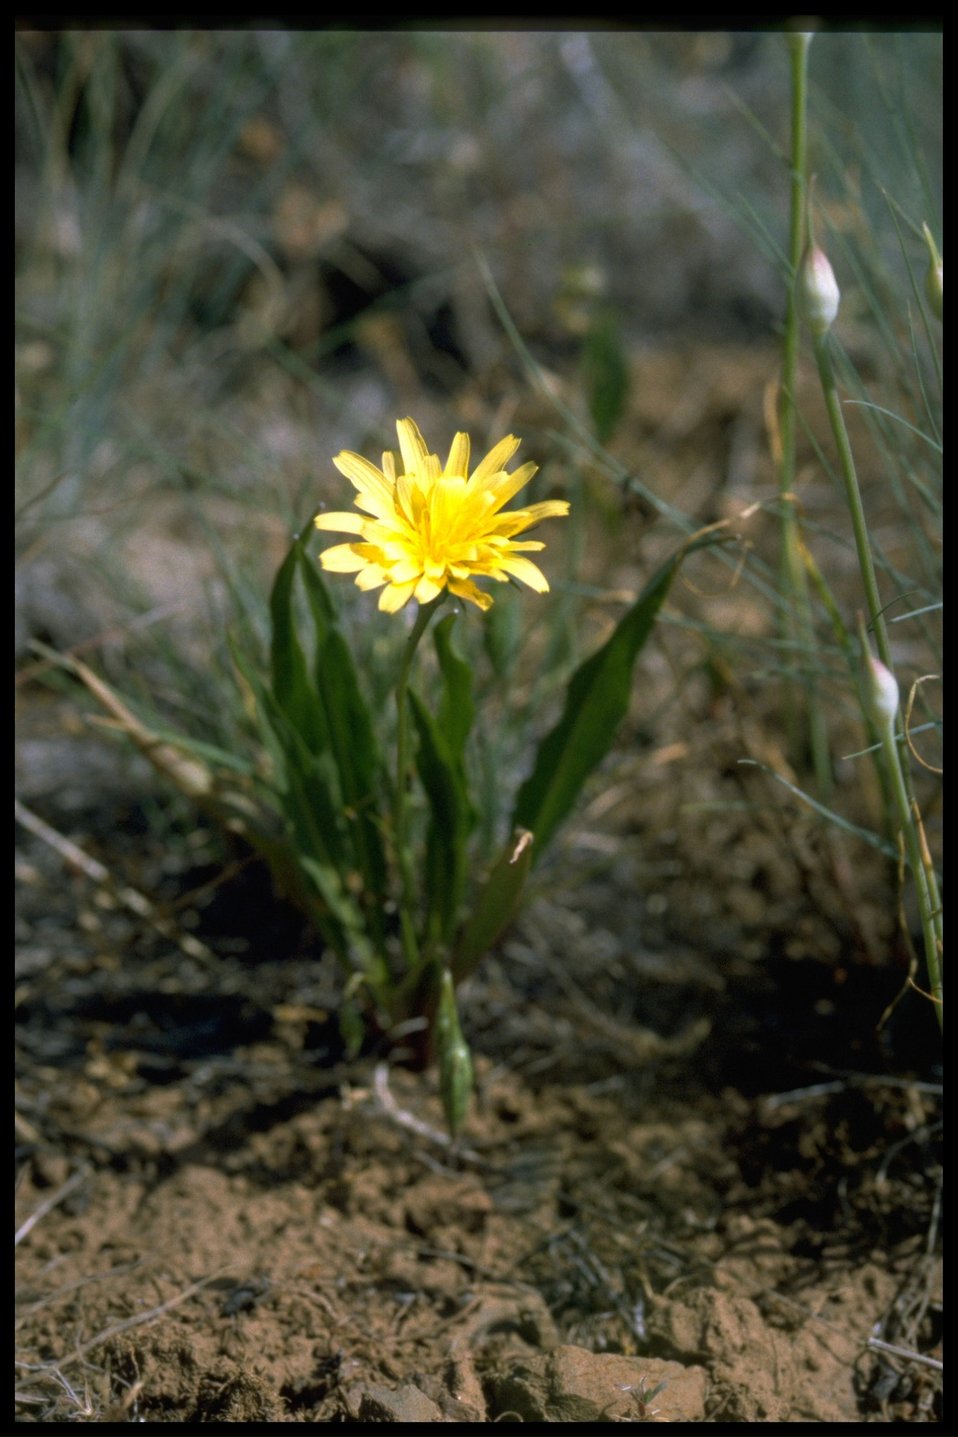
Medium shot of false agoseris wildflower, whole plant.